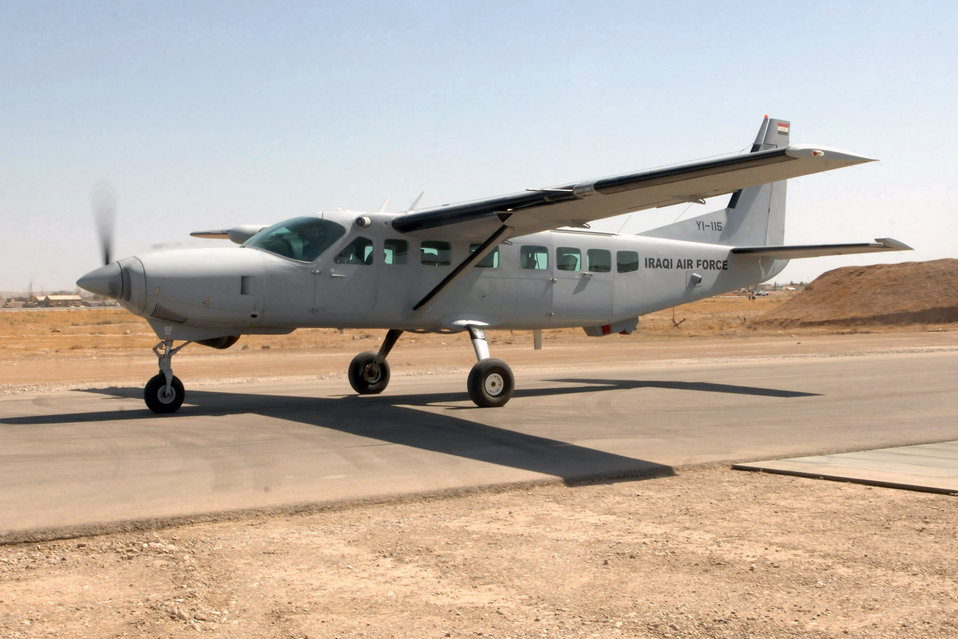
Iraqi training wing soars to 3,000th hour

Iraqi air force 2nd Lt. Hassan taxies his aircraft into a hangar at Kirkuk Regional Air Base, Iraq, Sept. 23 after his final check ride during which he surpassed the Iraqi air force's 3,000th flying training hour. Lt. Col. Scott Voskovitch, an instructor pilot with the 52nd Expeditionary Flying Training Squadron, flew with Lieutenant Hassan, an Iraqi air force Flying Training Wing student pilot, for the record-setting msision.